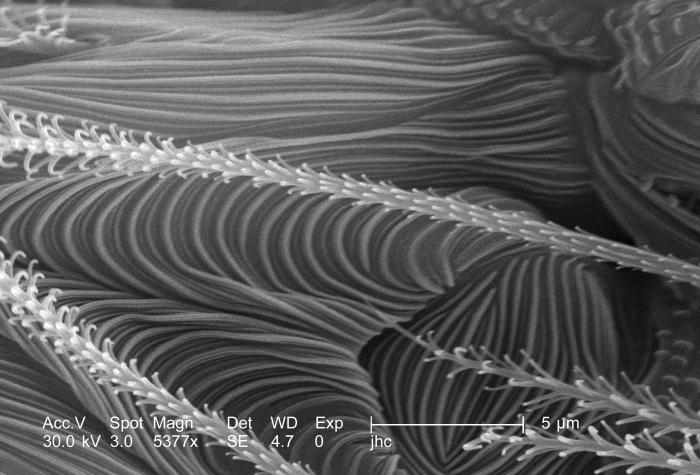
Under a high magnification of 5377x, this scanning electron micrograph (SEM) revealed the presence of numbers of mites from the specie Nanorchestes sp., Family Nanorchestidae, which were highly festooned with an adornment of chitinous exoskeletal outcroppings. Under this high magnification, these exoskeletal complexities were better appreciated in their diaphanous majesty.